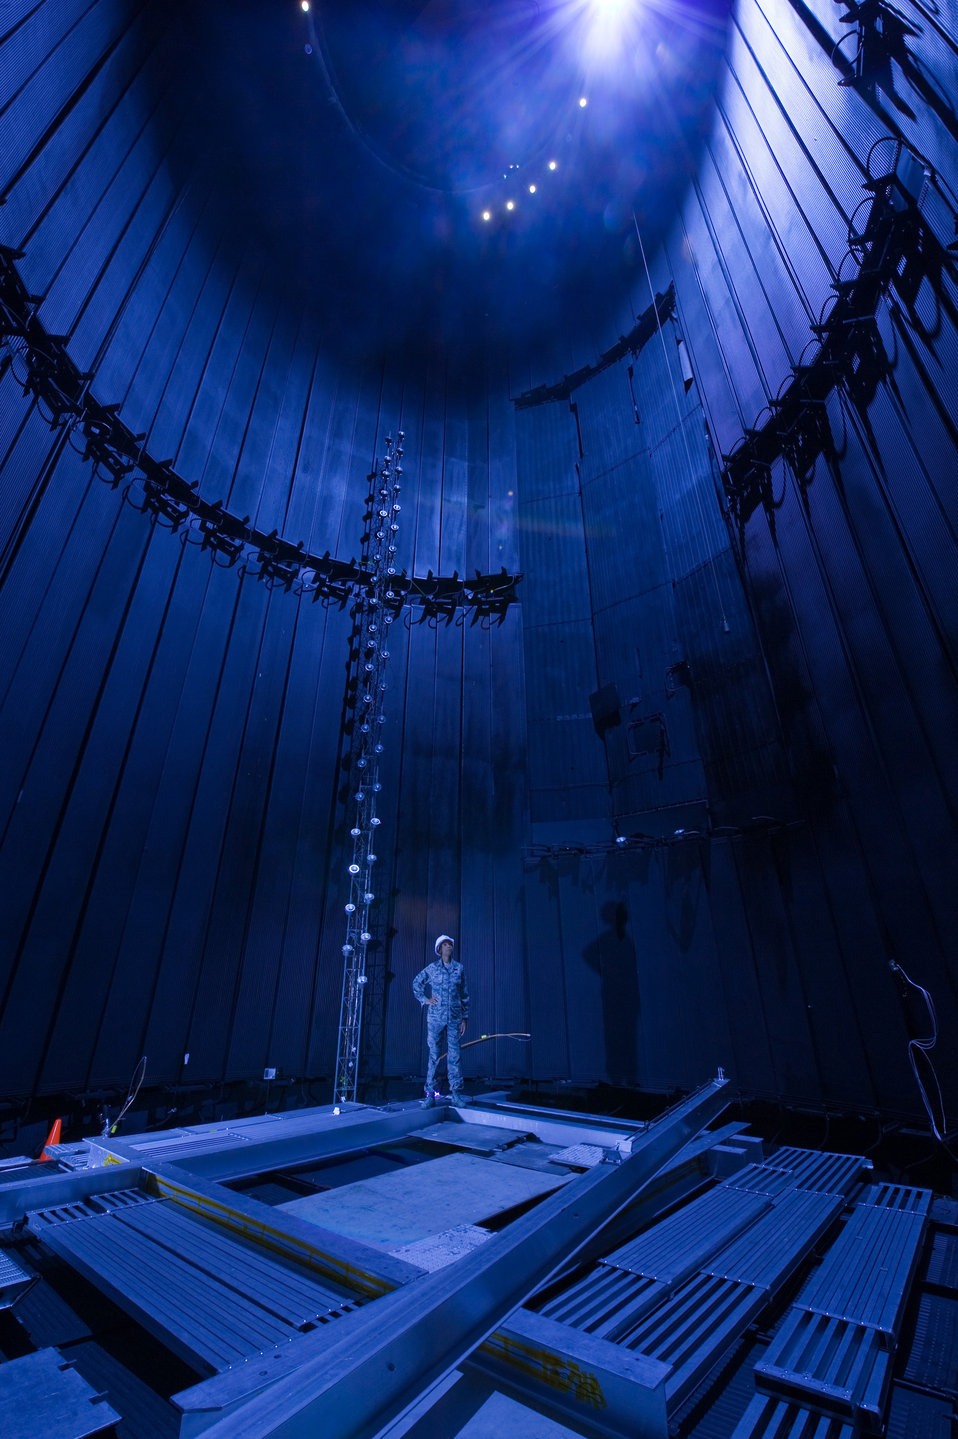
In the Space Chamber

Capt. Catercia